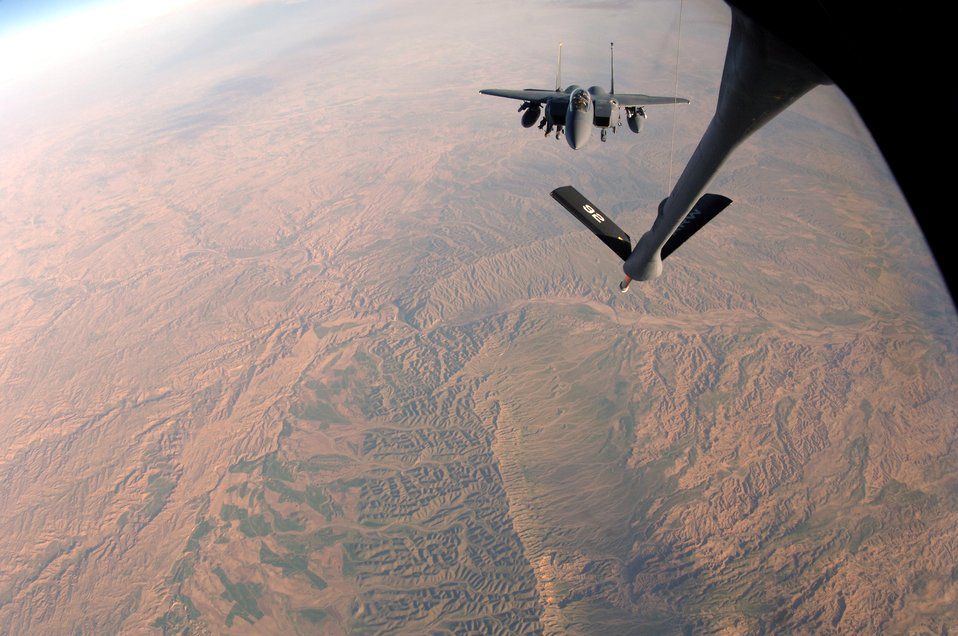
A view to a refuel

An F-15E Strike Eagle from the 336th Expeditionary Fighter Squadron is refueled over Southwest Asia by a KC-135 Stratotanker from the 340th Expeditionary Air Refueling Squadron on Tuesday, April 11, 2006. The F-15E is deployed from Seymour Johnson Air Force Base, N.C., and the KC-135 is from Fairchild AFB, Wash.